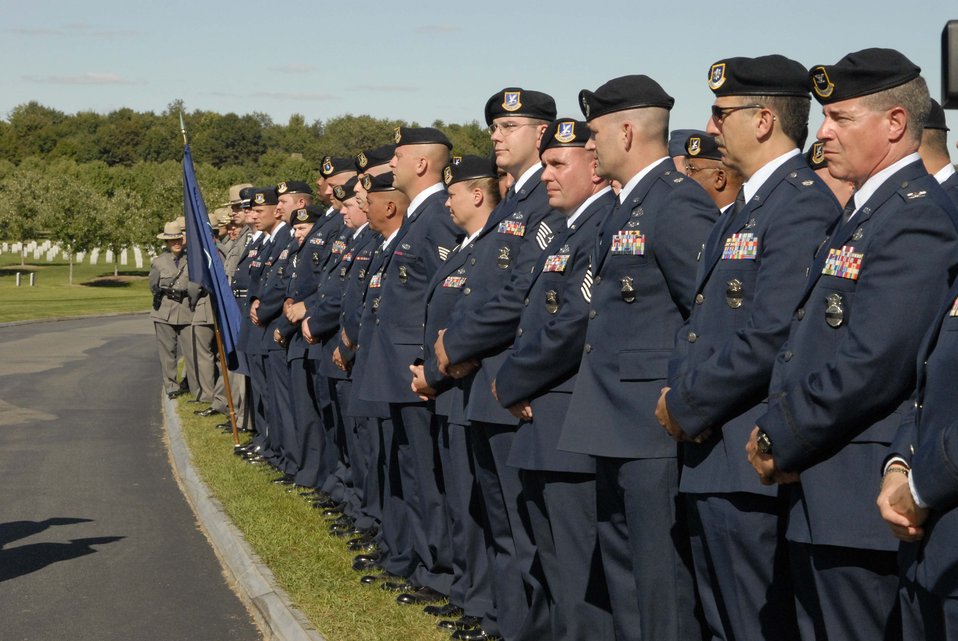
Airmen pay tribute to fallen guardsman

Airmen with the New York Air National Guard's 109th Airlift Wing stand in formation Sept. 11 waiting for the burial ceremony for Master Sgt. Joseph Longobardo to begin. Sergeant Longobardo, a guardsman with the 109th Security Forces Squadron, was a New York State Police officer who was killed in the line of duty Sept. 3 while participating in the manhunt for fugitive Ralph